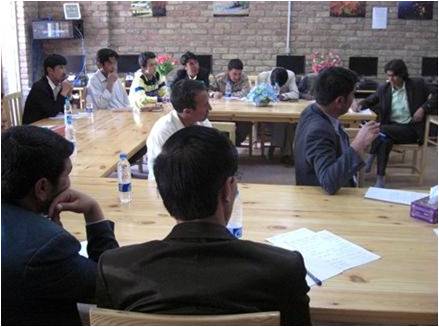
Workshop on Media Roundtables and Social Media